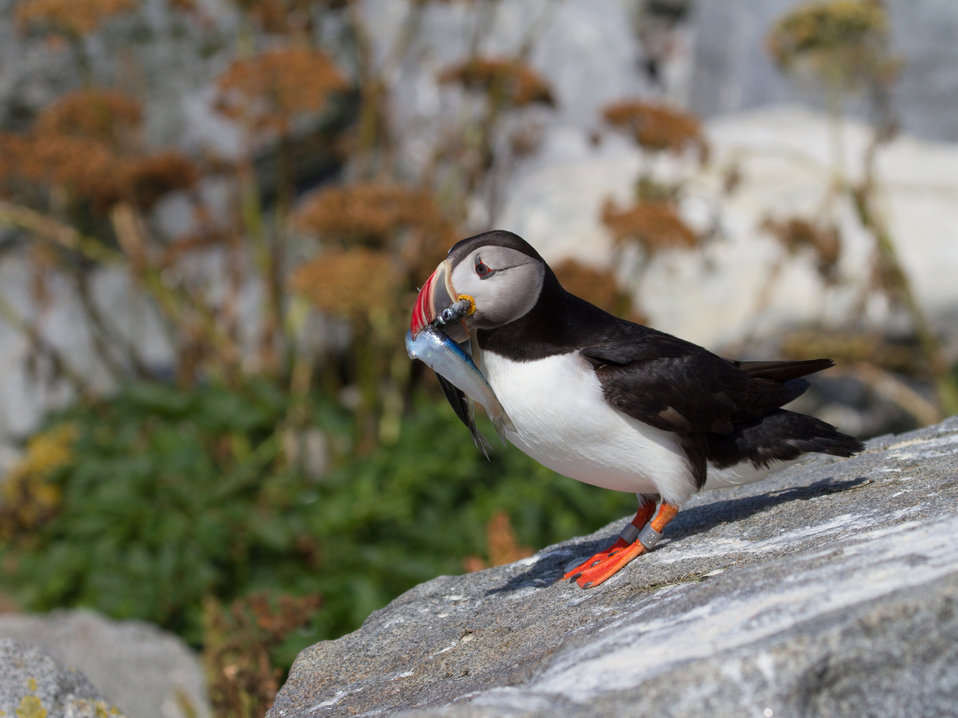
Atlantic Puffin

Photographed at Petit Manan National Wildlife Refuge.